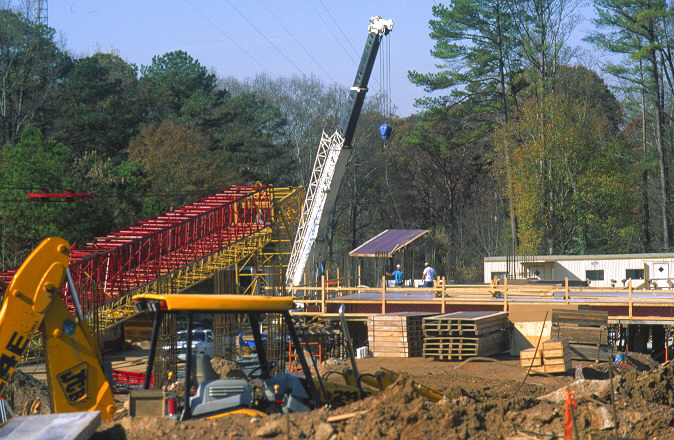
Construction site for south parking deck, CDC Roybal Campus.